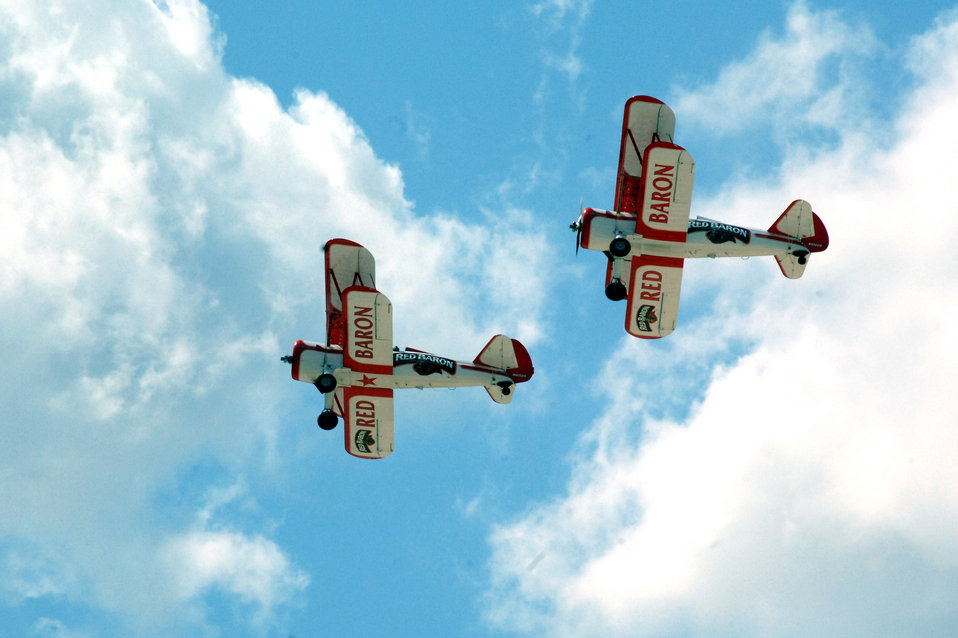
Baron Barnstormers

Two historic Red Baron Pizza Squadron biplanes give incentive rides to Airmen in the skies over Del Rio, Texas on Oct. 1. The Red Barons are vintage